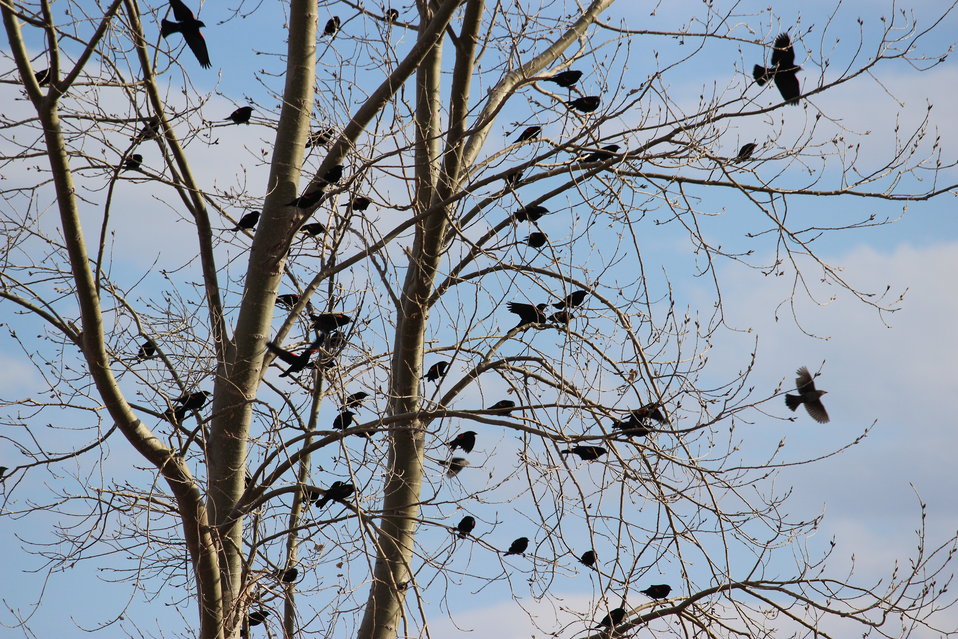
Red-winged Blackbirds

Male Red-winged blackbirds arrive before the females in the spring to stake their territory--many times on cattail marshes. One can see them perched individually on cattail stalks singing 'kon-ka-reeeee'.